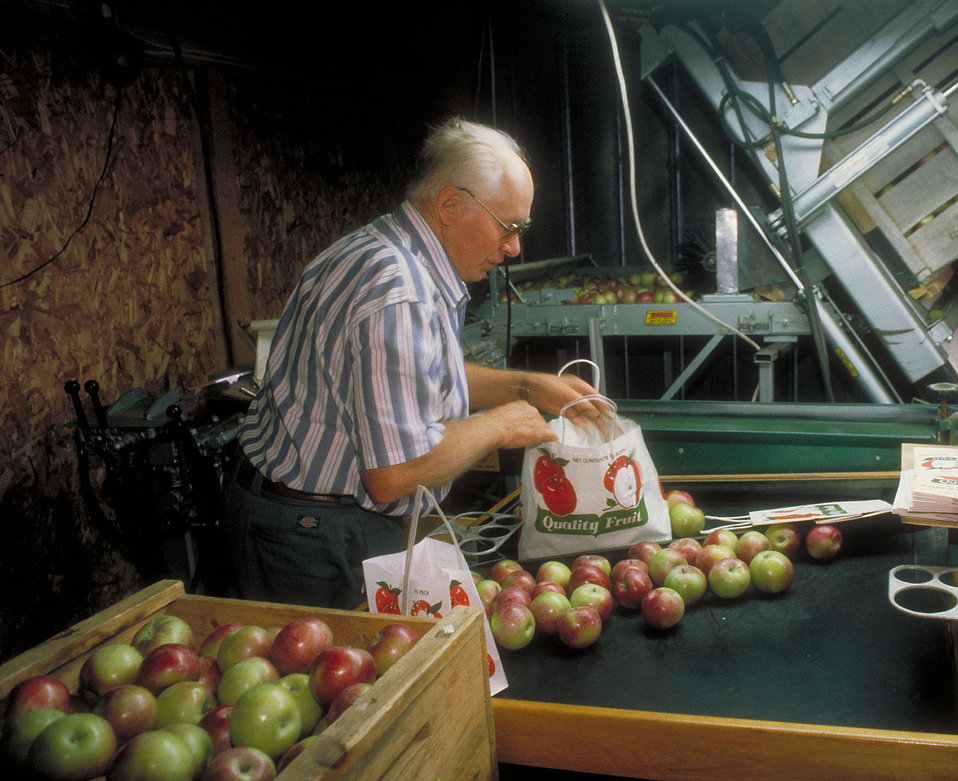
Donaly Patch sorts and bags apples on the Walhowdon Farm in Lebanon, New Hampshire in September 1999.